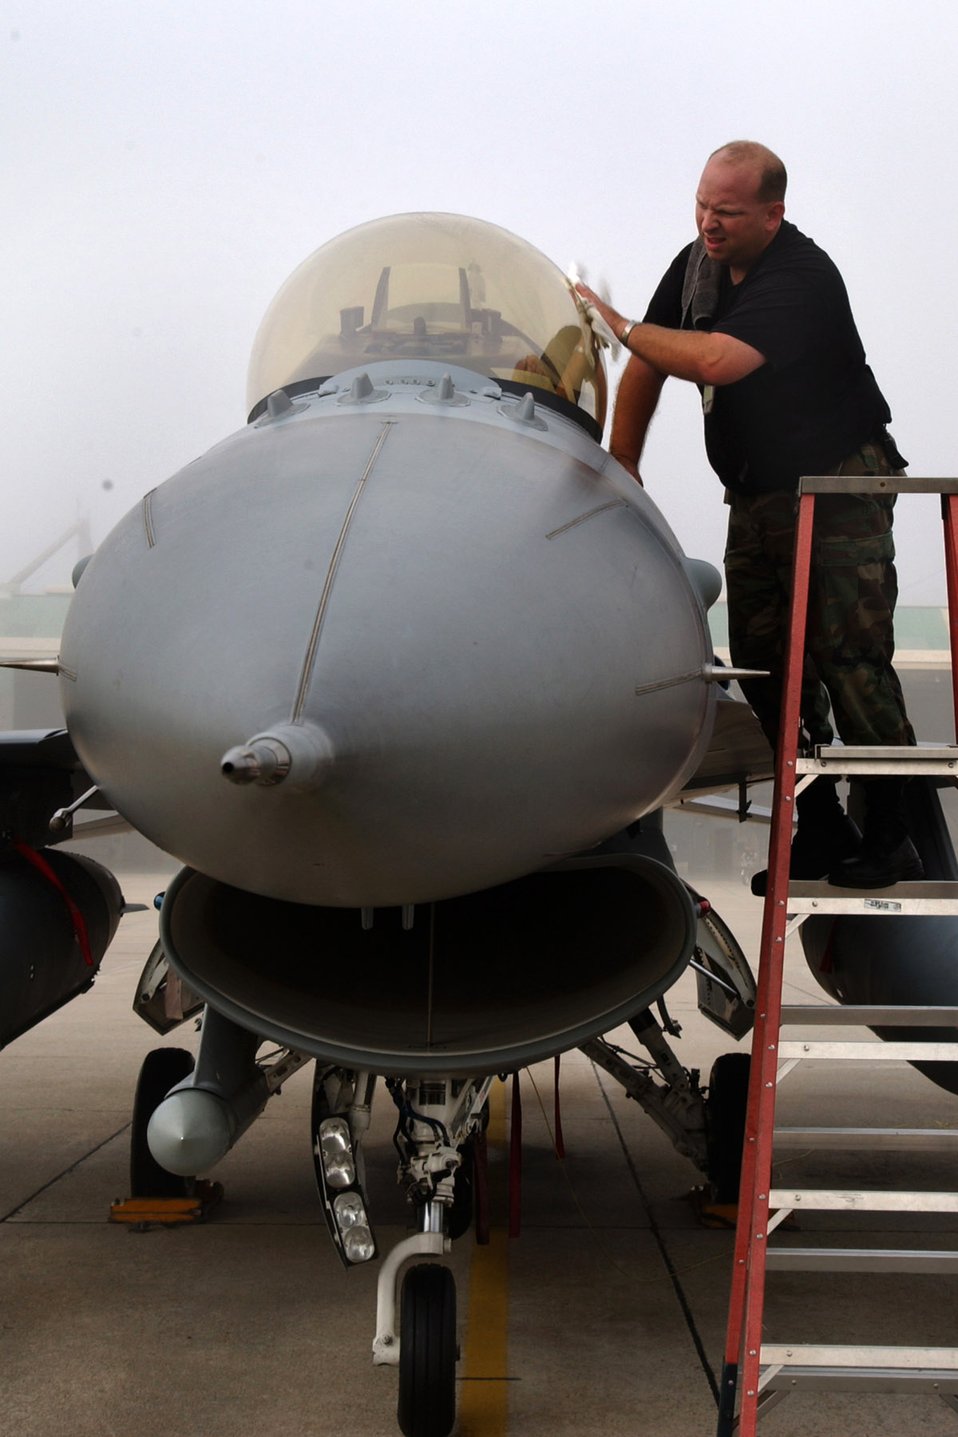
Guard support

Tech. Sgt. Edgar Miller wipes moisture off the canopy of an F-16 Fighting Falcon in preparation for takeoff from McEntire Air National Guard Base, S.C., Aug. 28. Members of the 169th Fighter Wing are filling an air expeditionary force role for Pacific Air Forces. Sergeant Miller is assigned to the 169th Aircraft Maintenance Squadron.